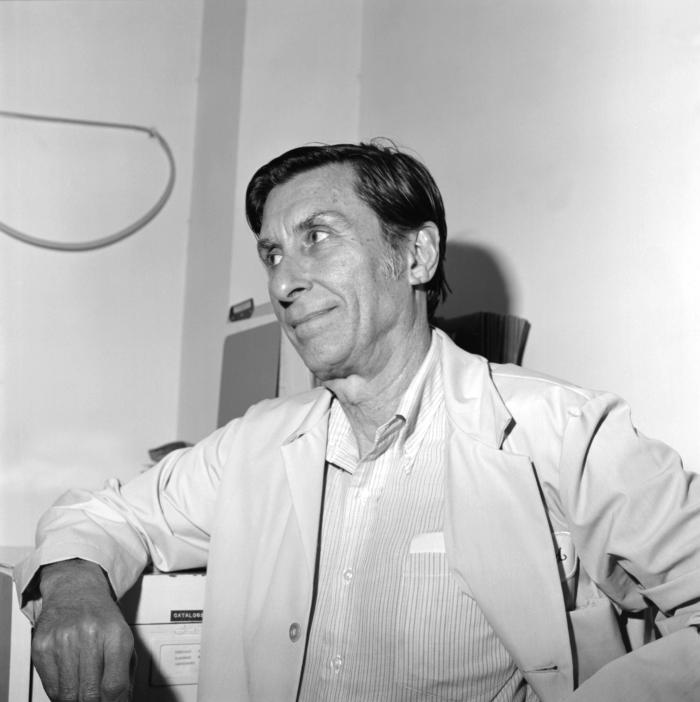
This photograph depicts microbiologist, and former director of Centers for Disease Control's Laboratory Division, Dr. Charles C. Shepard. It was through the diligent efforts of doctors Sheppard, and cohort microbiologist Joseph McDade, which lead to the 1977 discovery of the initially illusive bacterium Legionella pneumophila, the etiologic agent that causes 'Legionnaires' disease'.